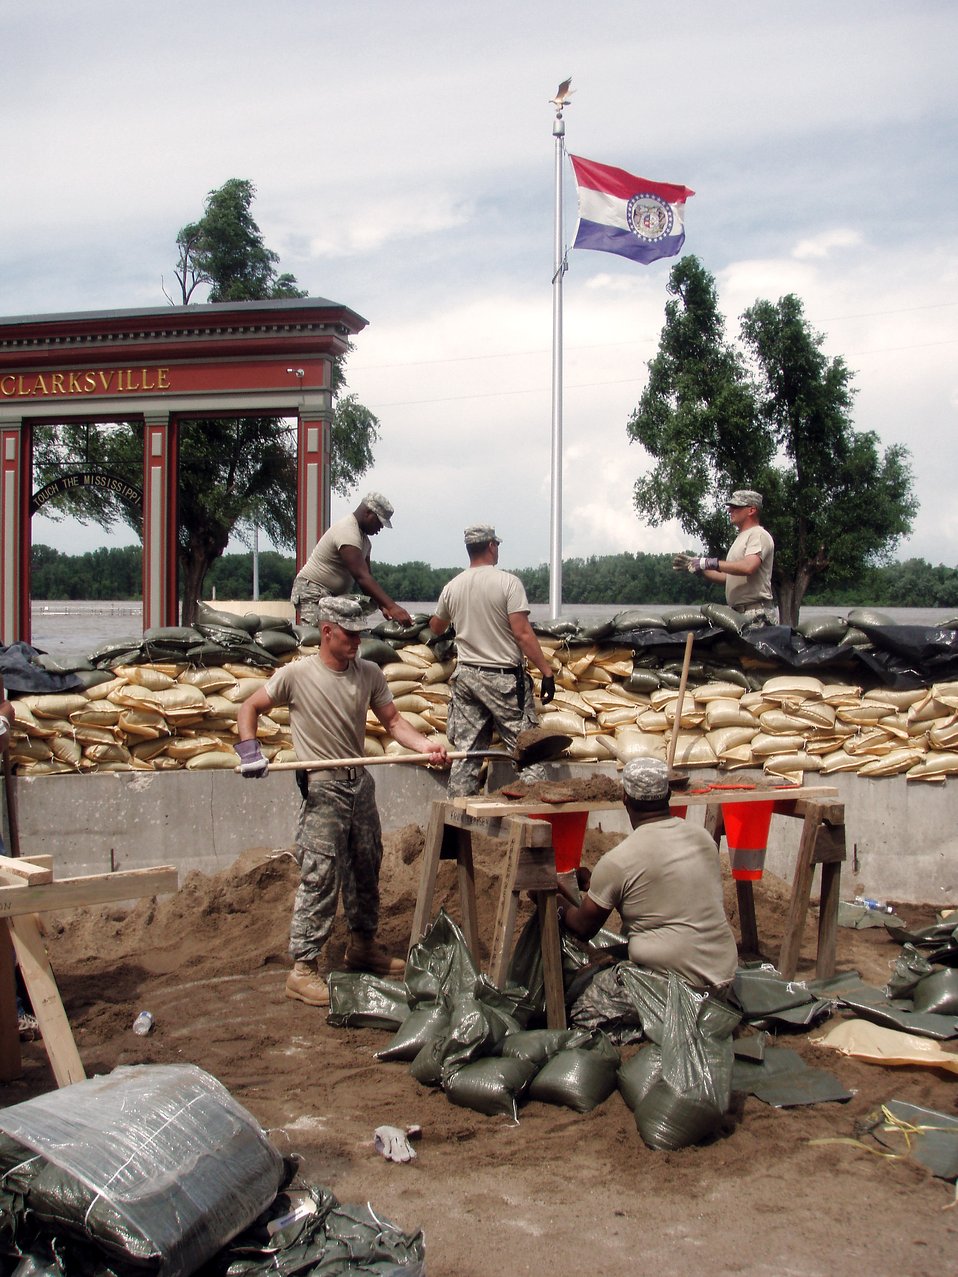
National Guard in two states prepare for rising river waters

More than 600 National Guardsmen in Illinois and Missouri will continue sandbagging operations along the Mississippi River June 16 in an effort to thwart the floodwaters that are subsiding in Iowa. Guardsmen fill sandbags in Clarksville, Mo., an area expected to recieve more floodwater this week. In Illinois, 400 Soldiers and Airmen were mobilized during the weekend to work on the levees north and south of Quincy, Ill. About 100 Air National Guardsmen from the 183rd Fighter Wing in Springfield, Ill., the 182nd Airlift Wing in Peoria were mobilized June 15.